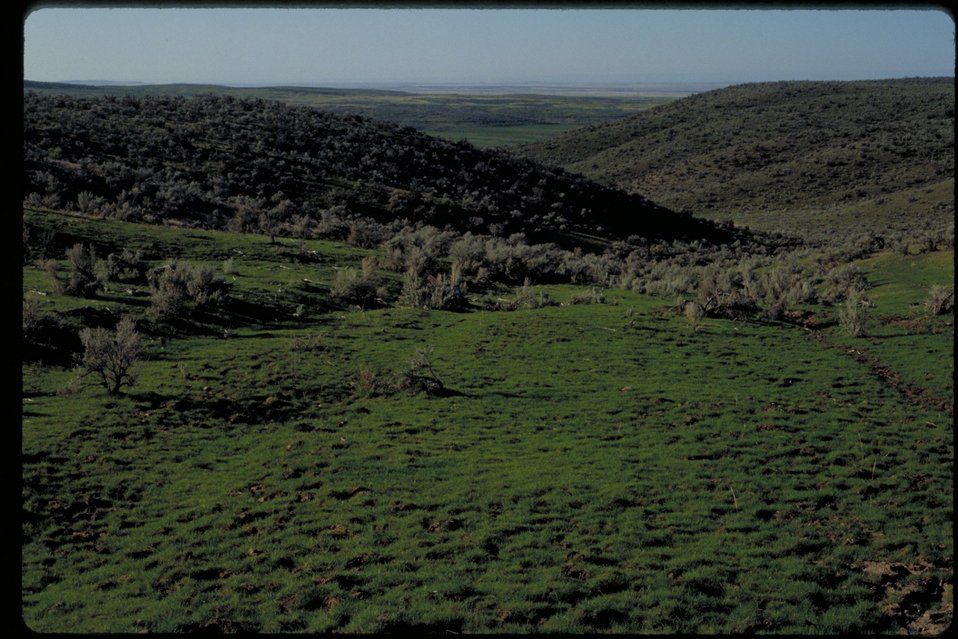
Oregon Trail West of Bowns Creek Lower Snake River District